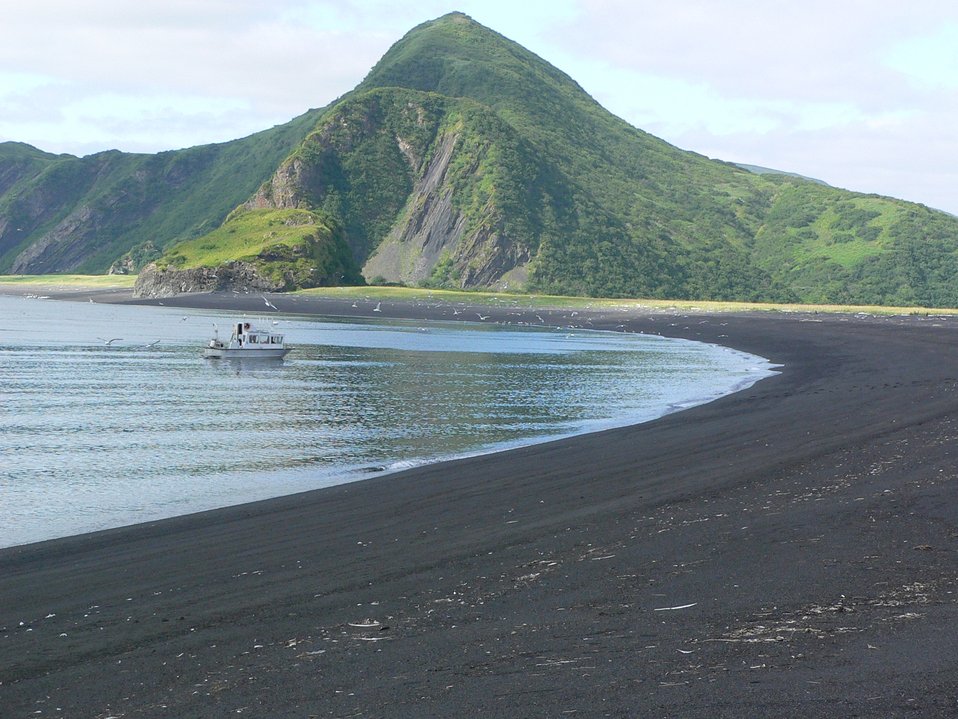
The arcuate beach at Fish Ranch Bay. A survey boat from the NOAA Ship RAINIER is waiting for a shore survey party to complete its work.